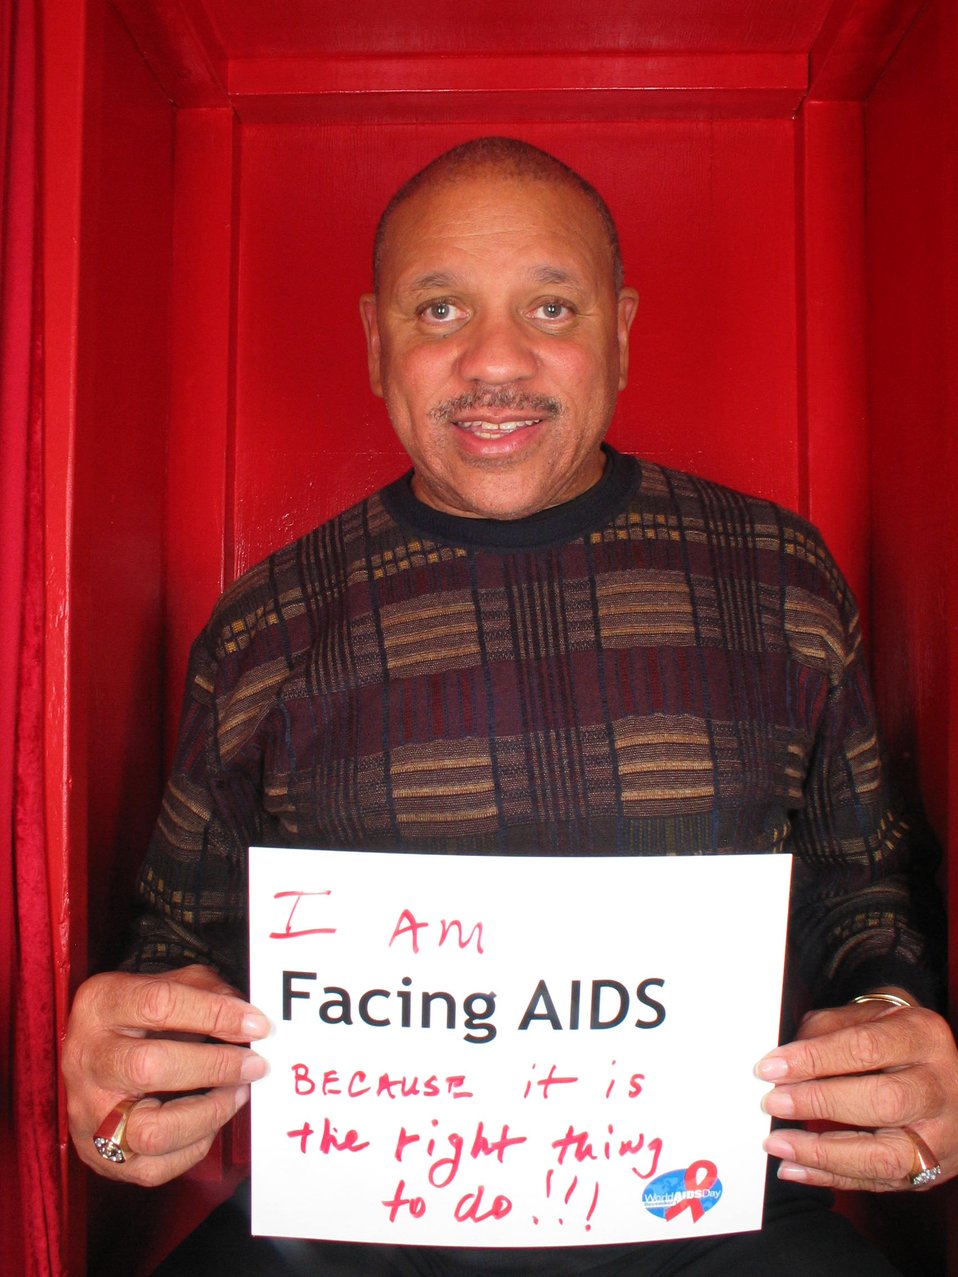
I am Facing AIDS because it is the right thing to do.